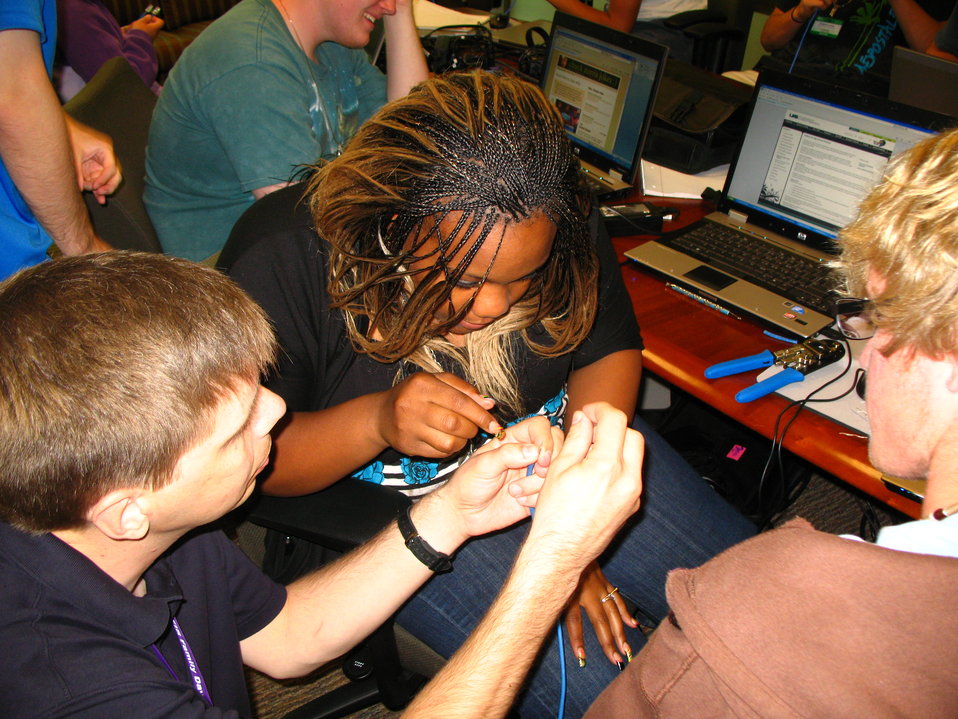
ARCSUPERS (19)